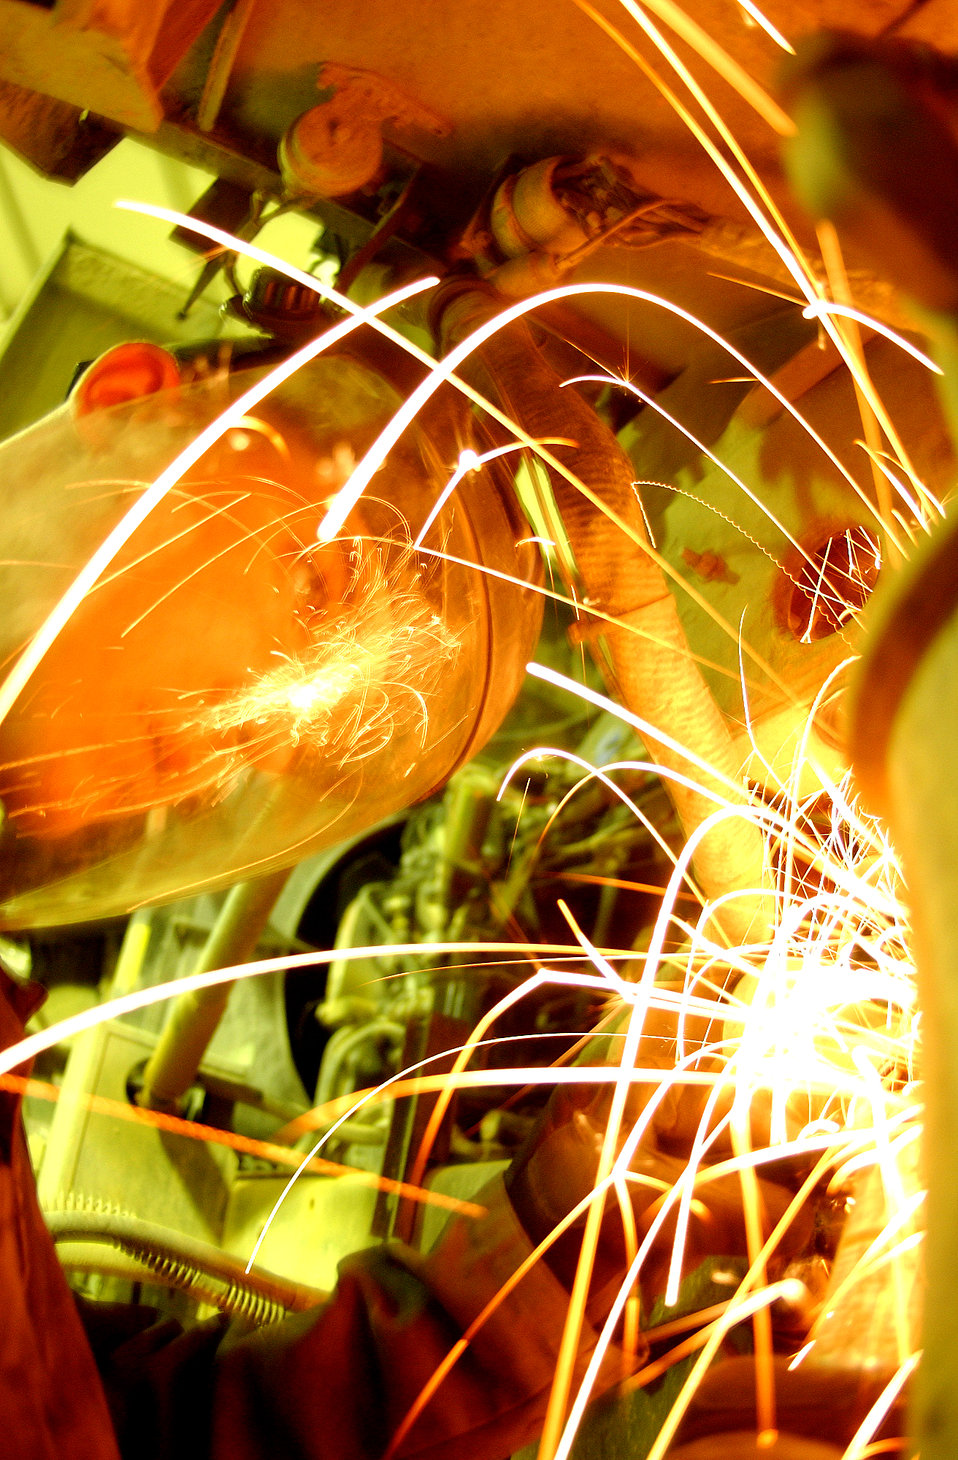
Airmen add armor to convoy vehicles

BALAD AIR BASE, Iraq -- Airman 1st Class Joshua Gates grinds down a piece of metal on a truck before Airmen of the 732nd Expeditionary Mission Support Group add armor to it. Airman Gates is a vehicle maintainer in the group's add-on armor shop.